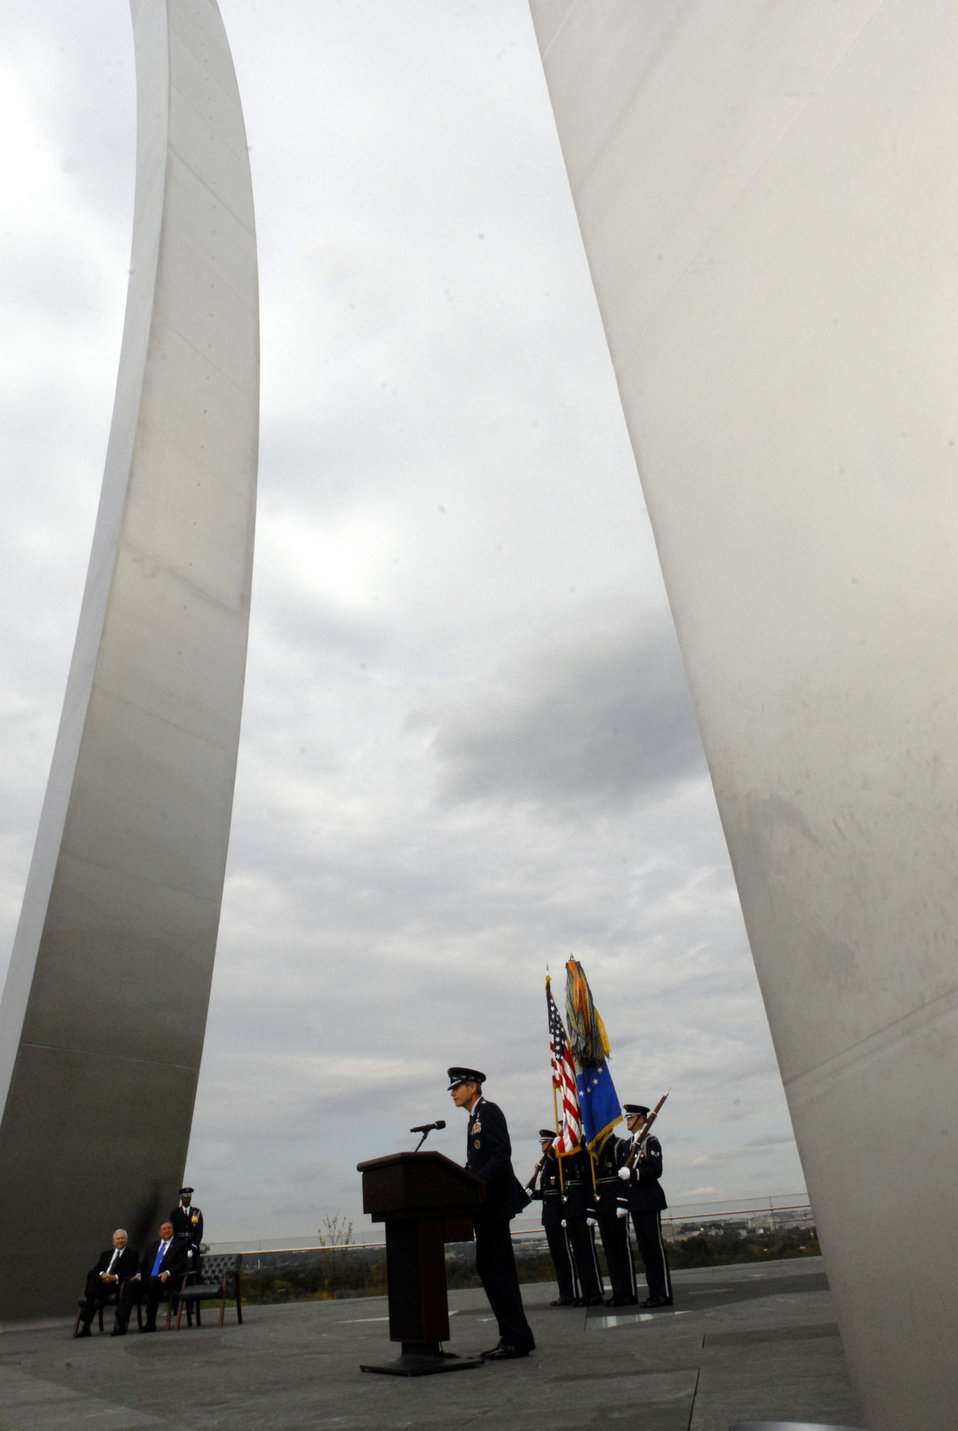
Donley officially sworn in as Secretary of the Air Force

Chief of Staff of the Air Force Gen. Norton Schwartz presided over a ceremony Oct. 17 at the Air Force Memorial in Arlington, Va., welcoming Michael Donley as the 22nd secretary of the Air Force.